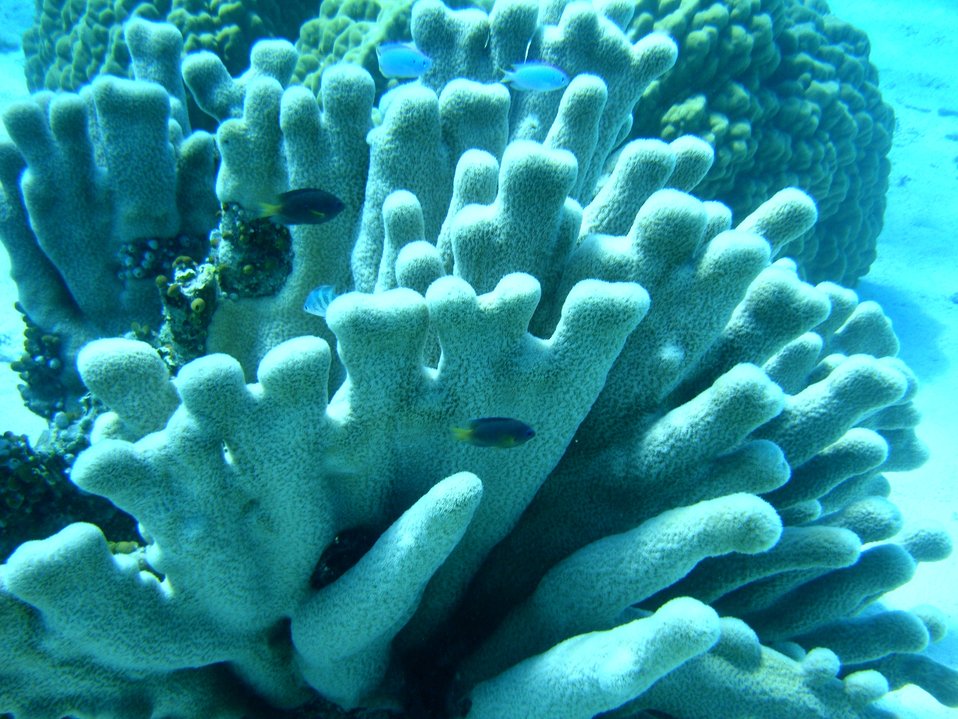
Poritidae coral Porites sp.